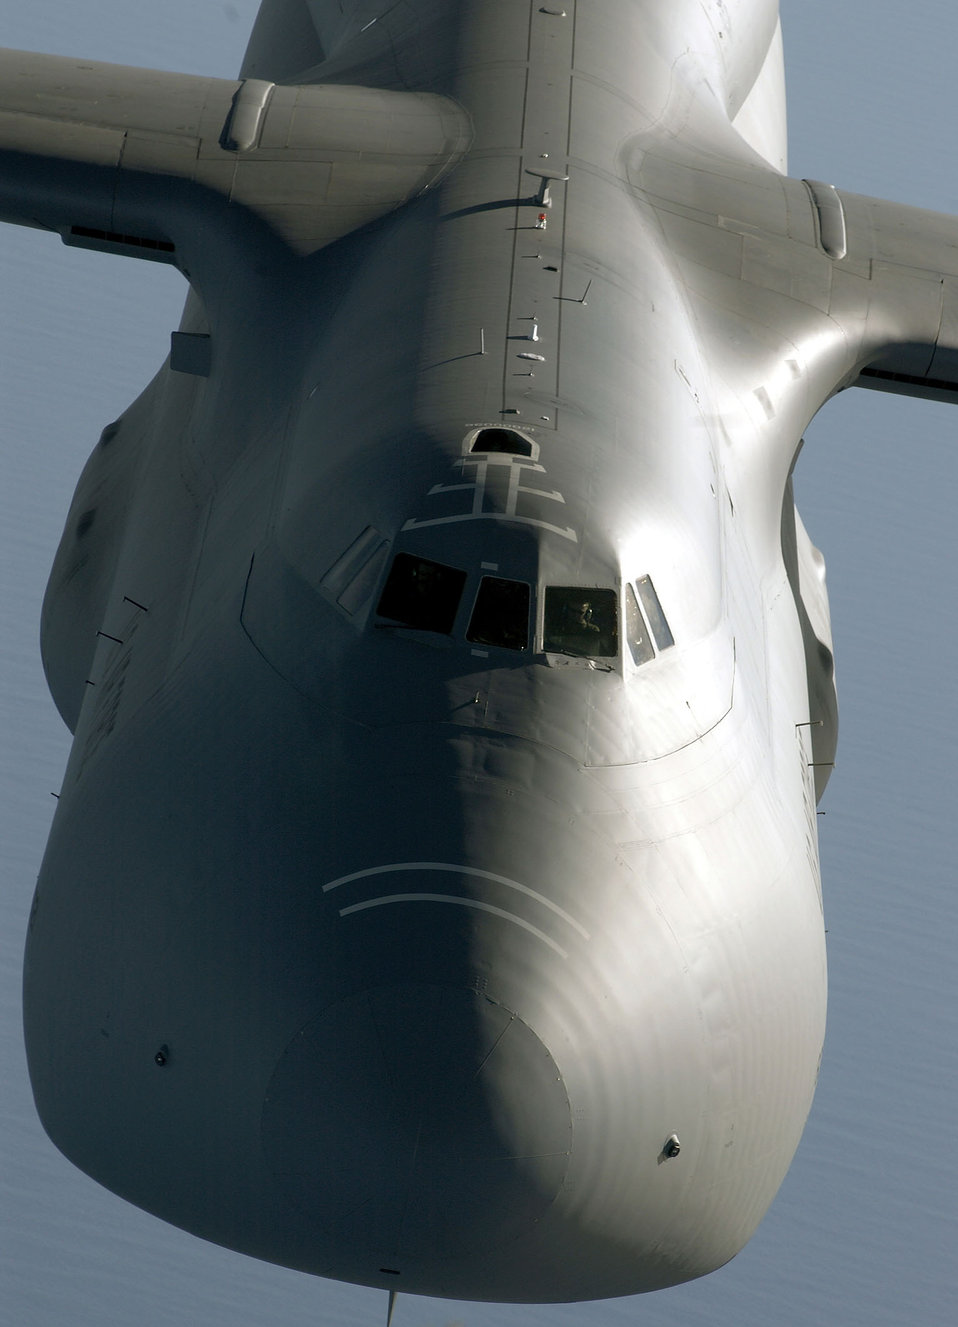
A Galaxy near you

OVER THE PACIFIC OCEAN -- The gigantic C-5 Galaxy, with its tremendous payload capability, provides the Air Mobility Command intertheater airlift supporting United States national defense. The C-5 is one of the largest aircraft in the world. It can carry outsize and oversize cargo intercontinental ranges and can take off or land in relatively short distances. Ground crews can load and unload the C-5 simultaneously at front and rear cargo openings.